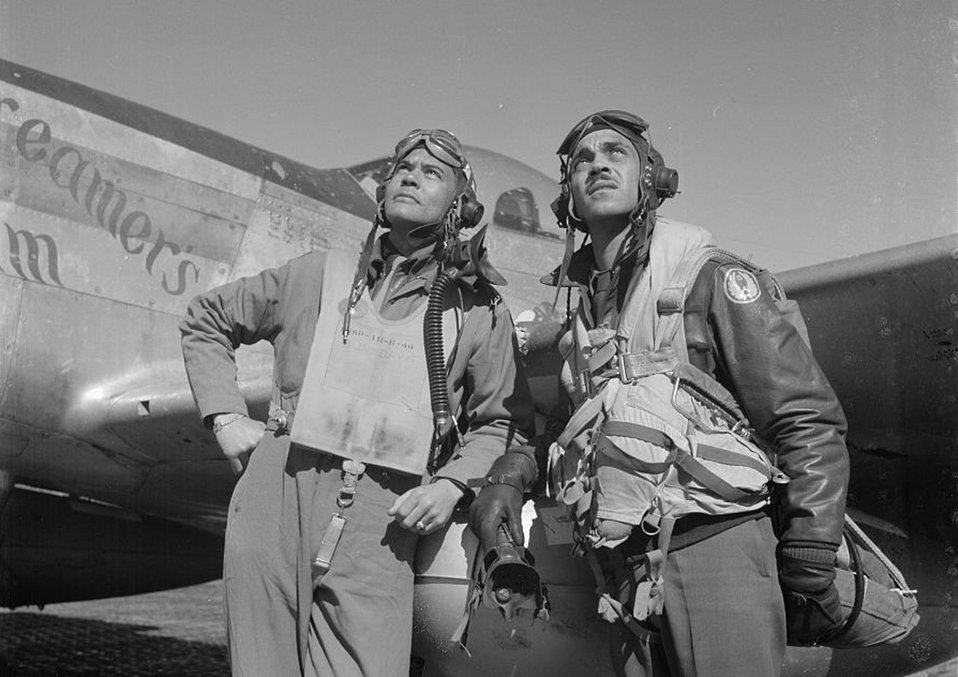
Benjamin O. Davis Jr.: Commanded